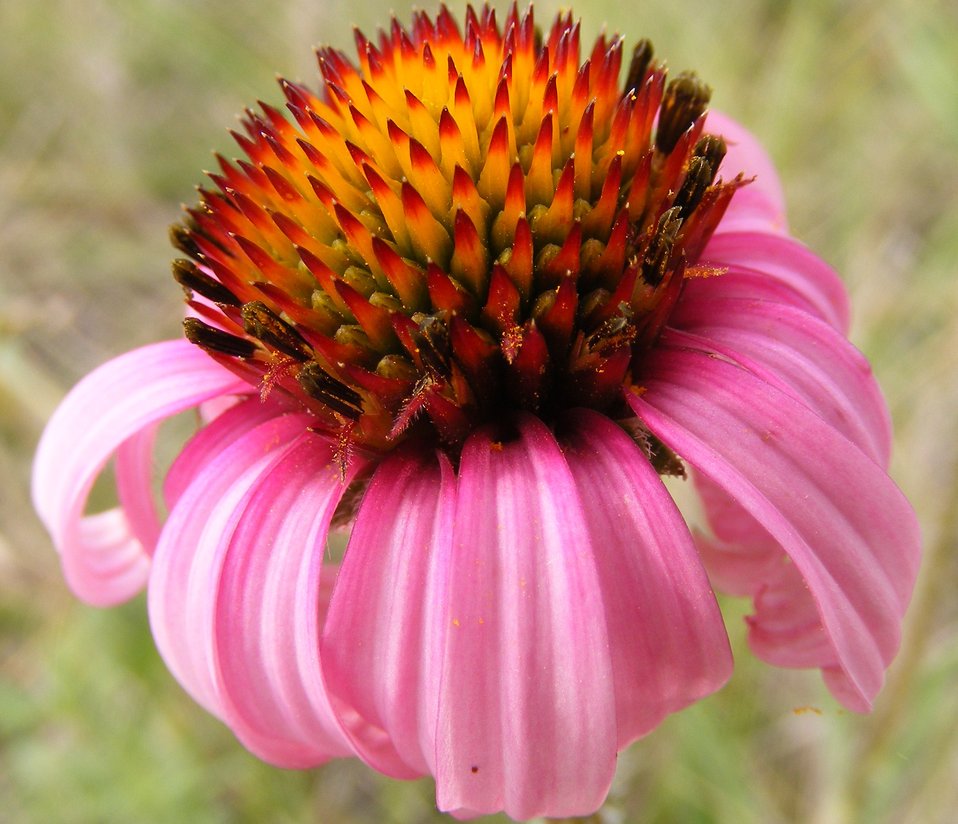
Purple coneflower

The grocery store of native prairies. The nectar is attractive to butterflies, bees, and ants. Spiders are often seen waiting for these other unsuspecting visitors.